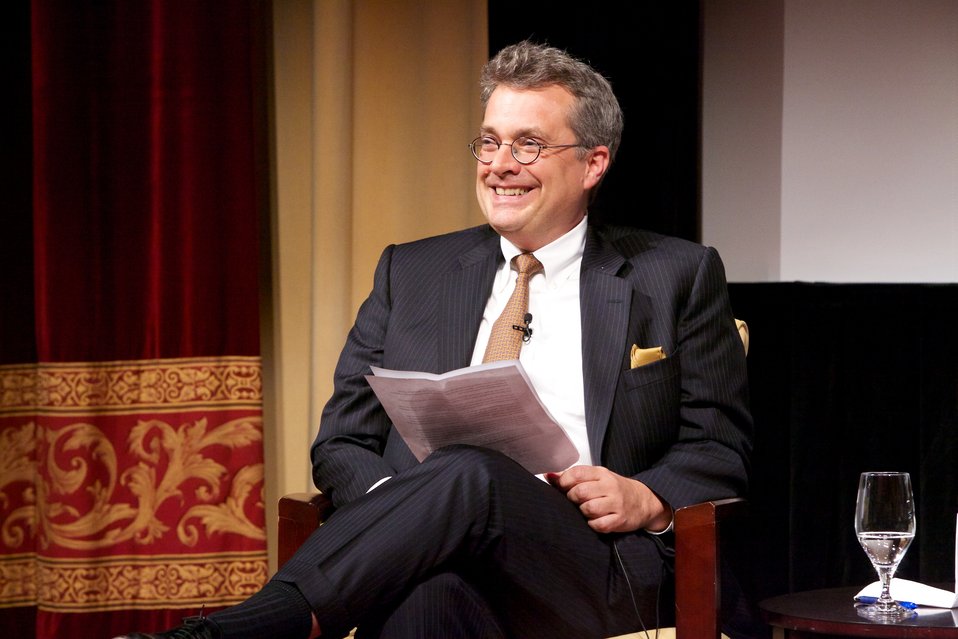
Jazz Diplomacy: Sending America's Music to the World